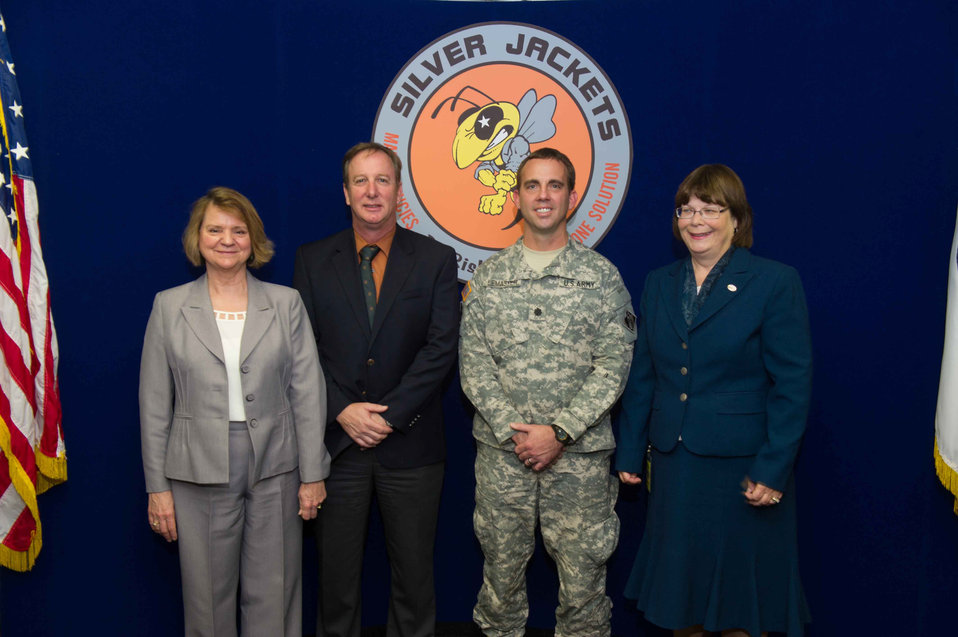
California joins national Silver Jackets disaster coordination program

Program leaders for California’s new Silver Jackets team Terri Wegener (left), with the California Department of Water Resources, and Judy Soutiere (right), with the U.S. Army Corps of Engineers Sacramento District, pose with DWR Deputy Director of Integrated Water Management Gary Bardini and Sacramento District Deputy Commander Lt. Col. Braden LeMaster after a ceremony celebrating the new team in Sacramento, Calif., Nov. 4, 2013. The Silver Jackets program is designed to improve coordination, collaboration and communication among disaster-response agencies at all levels of government before a disaster strikes to hasten recovery. California is the 40th state to establish a Silver Jackets team.